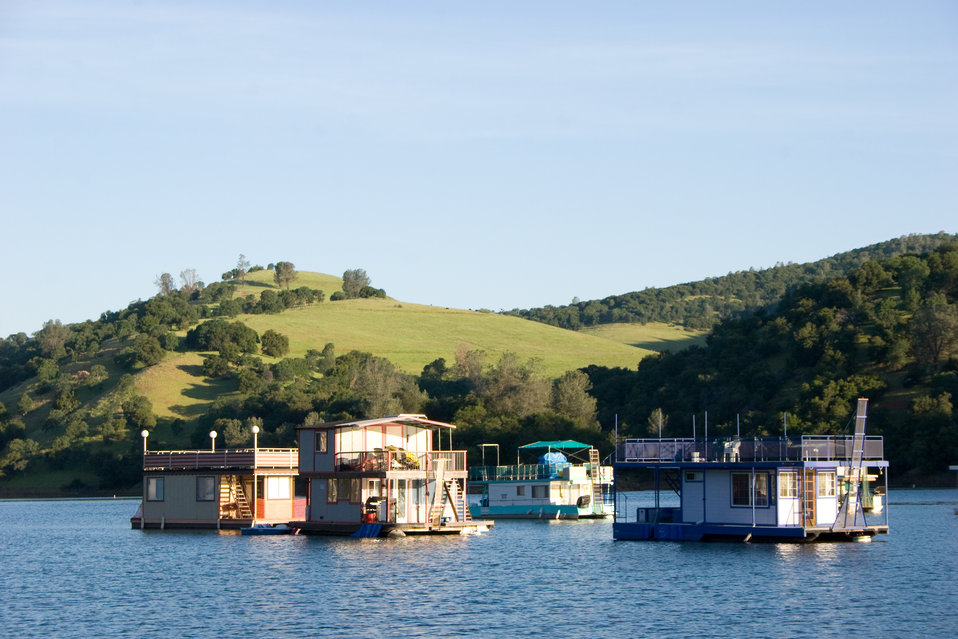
Englebright Lake

Boating, fishing and boat-in camping are some of the recreational opportunities at Englebright Lake near Marysville, Calif., shown on April 22, 2009. Formed by Englebright Dam the lake is 9 miles long with a surface area of 815 acres, an elevation of 527 feet and 24 miles of shoreline. Completed by the U.S. Army Corps of Engineers Sacramento District in 1941, the dam was authorized by Congress for the storage of hydraulic gold mining debris on the Yuba River. The concrete arch dam spans 1,142 feet across and is 260 feet high. The lake and dam are managed by the Sacramento District.